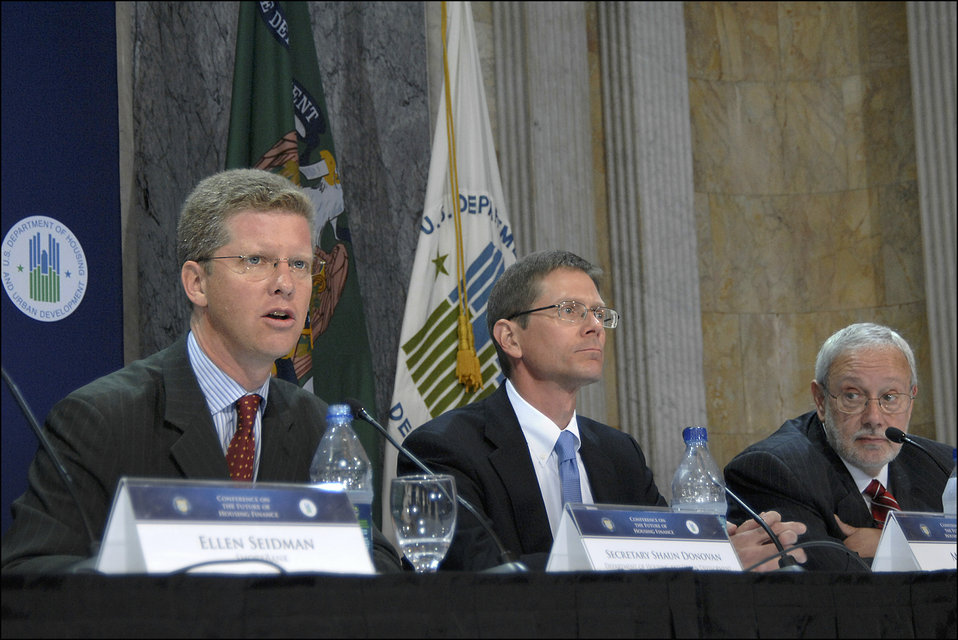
Conference on the Future of Housing Finance, 08/17/2010

HUD Secretary Donovan moderated providing opening remarks at a panel at the Conference on the Future of Housing Finance hosted by HUD and the Treasury Department